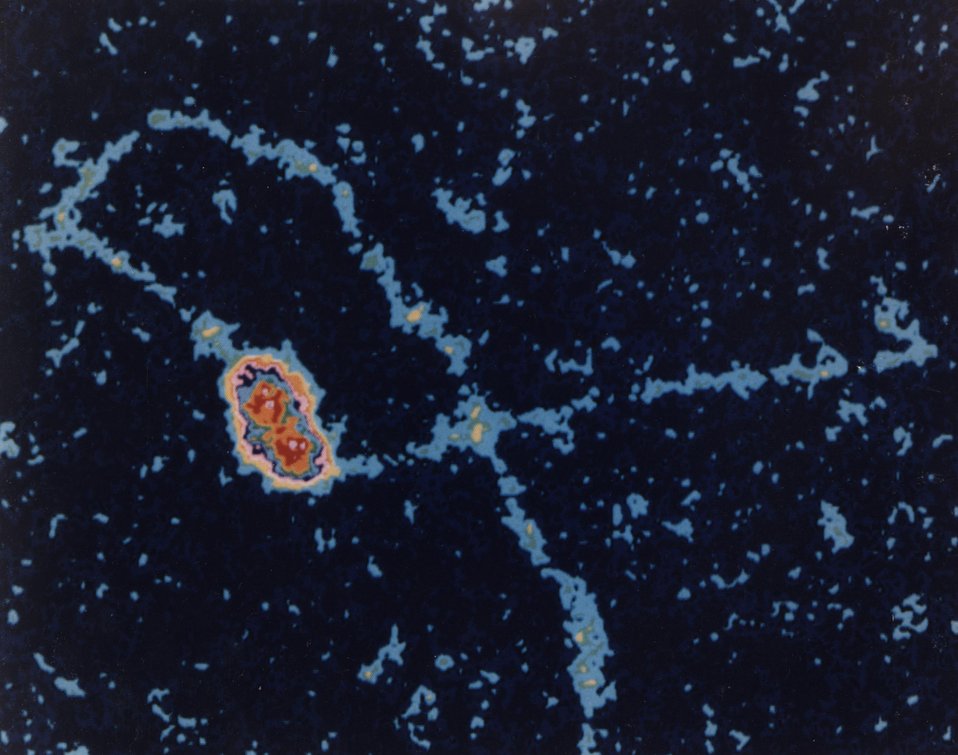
DNA replication is one of several central genetic processes that demand an association between proteins and DNA. With images such as this, the scanning transmission electron microscope (STEM) has revealed many of the details of DNA replication in the tumor virus SV40. Twelve subunits of a protein known as T antigen assemble themselves in two ringlike hexameter around the DNA, precisely at the origin of replication.